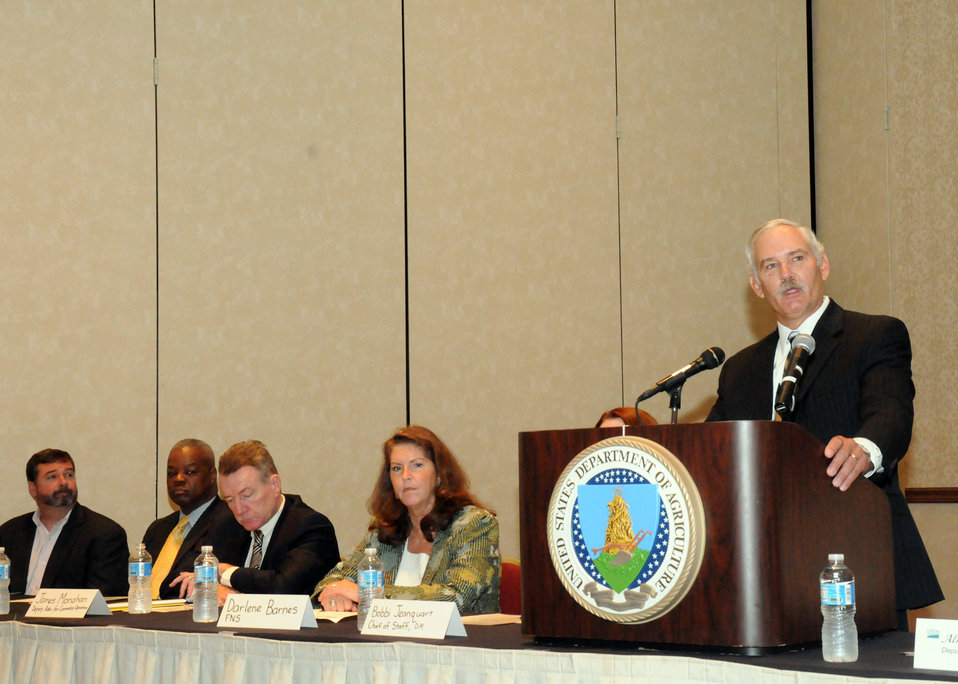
U.S. Department of Agriculture Deputy Under Secretary for Farm and Foreign Agricultural Service Michael Scuse makes opening remarks to employees at the Cultural Transformation listening session in Kansas City, MO, on Wednesday, April 14, 2010. (Seated L to R, USDA Chief Information Officer Chris Smith, Deputy Chief Information Officer Charles McClam, Deputy Administrator for Commodity Programs James Monahan, and Food Nutrition Service representative Darlene Barnes) USDA photo 10di1308-68.